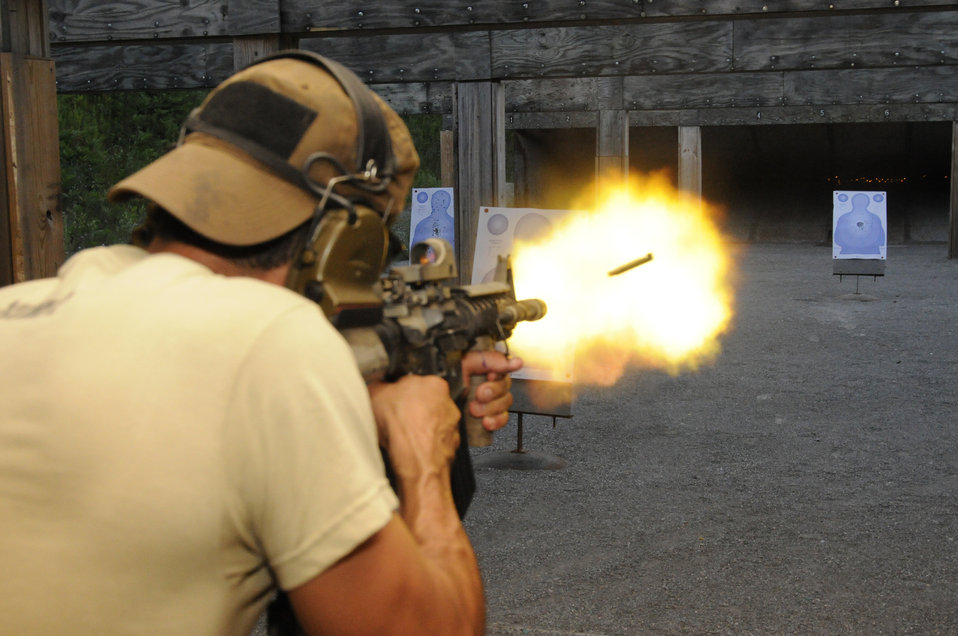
Bullseye

Senior Airman Jeremy Nunez fires an M-4 rifle July 20, 2011, during the annual Gray Wolverine training exercise at the combat readiness training center in Alpena, Mich. Nunez is from assigned to the Selfridge Air National Guard Base, Mich.